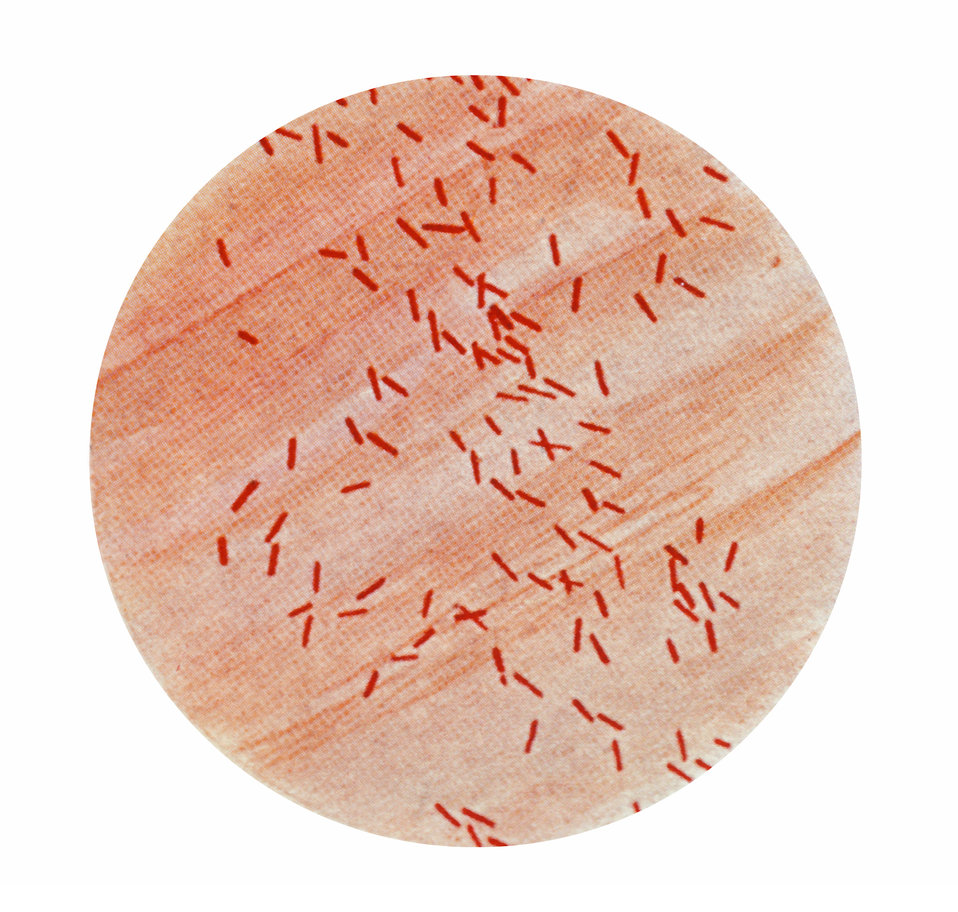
A photomicrograph of Escherichia coli, (Bacillus coli), bacteria using Gram-stain technique.